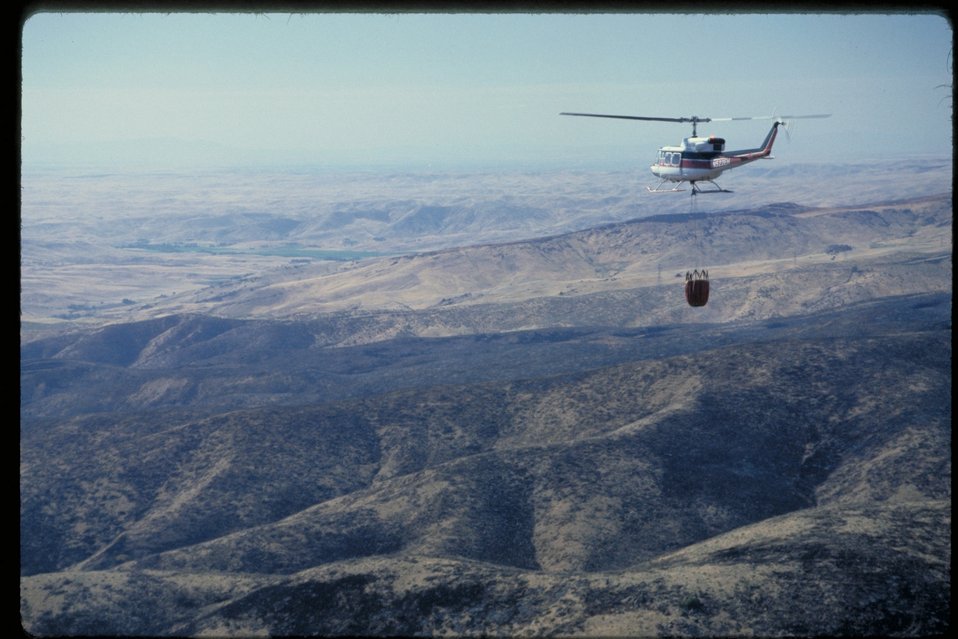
Helicopter dropping water bucket Foothills fire Boise Front Four Rivers Field Office LSRD Lower Snake River District